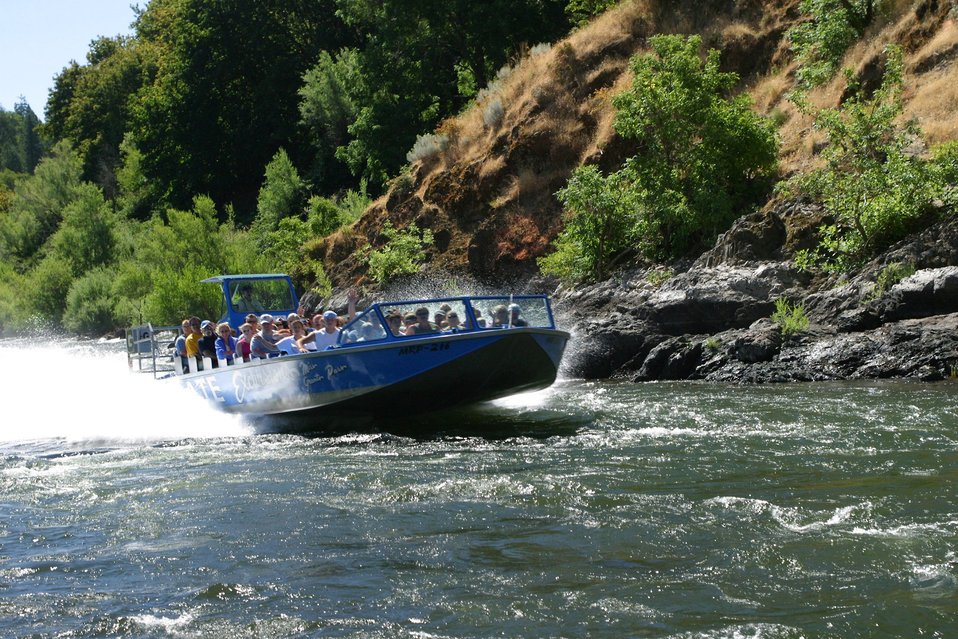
A jet boat passing Hog Creek just before entering Hellgate Canyon.